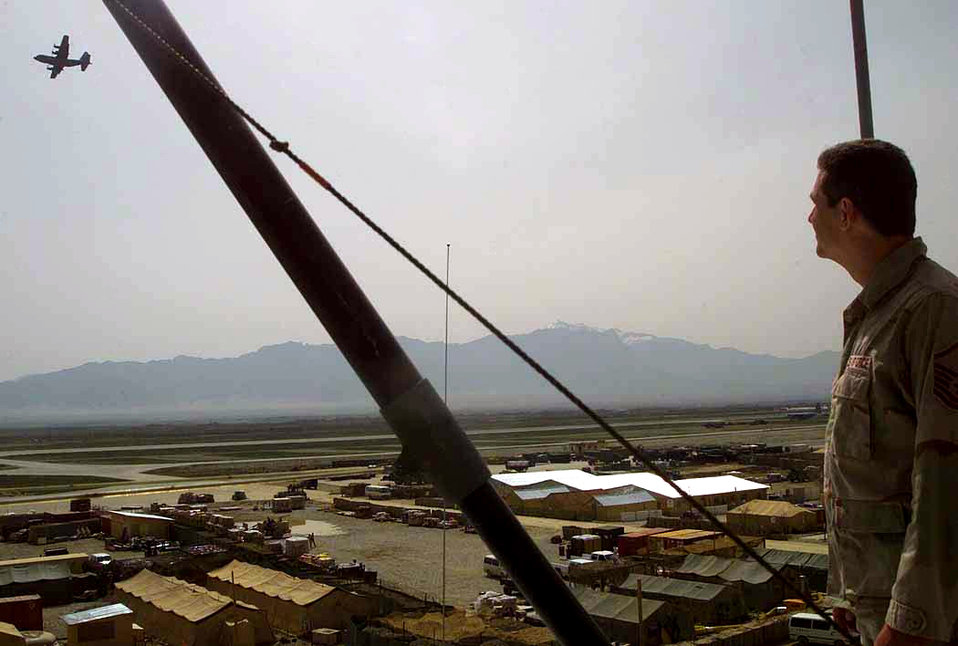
Chief controller

OPERATION ENDURING FREEDOM -- Master Sgt. Tim Sowder stands atop the flight tower watching as a C-130 Hercules takes off here March 26. He is the chief controller at the tower and is assigned to the 455th Expeditionary Operations Group at Bagram, Afghanistan.